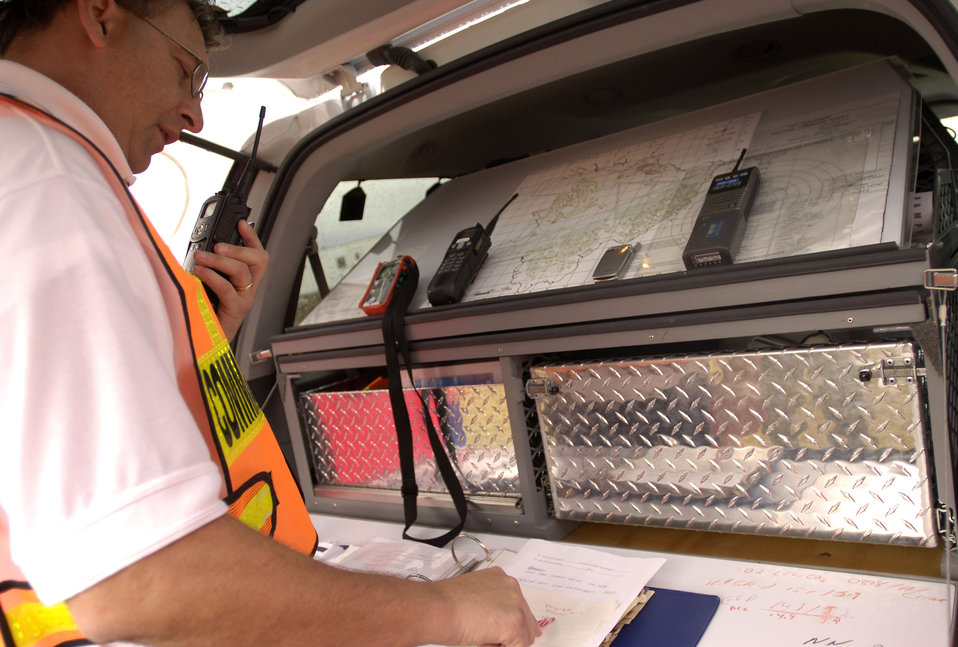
In case of emergency ...

Robert Kerby coordinates the next course of action with the disaster control group during an Oil Spill Response Exercise Nov. 29 at Langley Air Force Base, Va. The oil spill exercise was designed to test the reaction and response times as well as recovery process of Langley AFB members if an environmental mishap were to take place on the installation. Mr. Kerby was the the on scene commander during the base's Oil Spill Response Exercise.